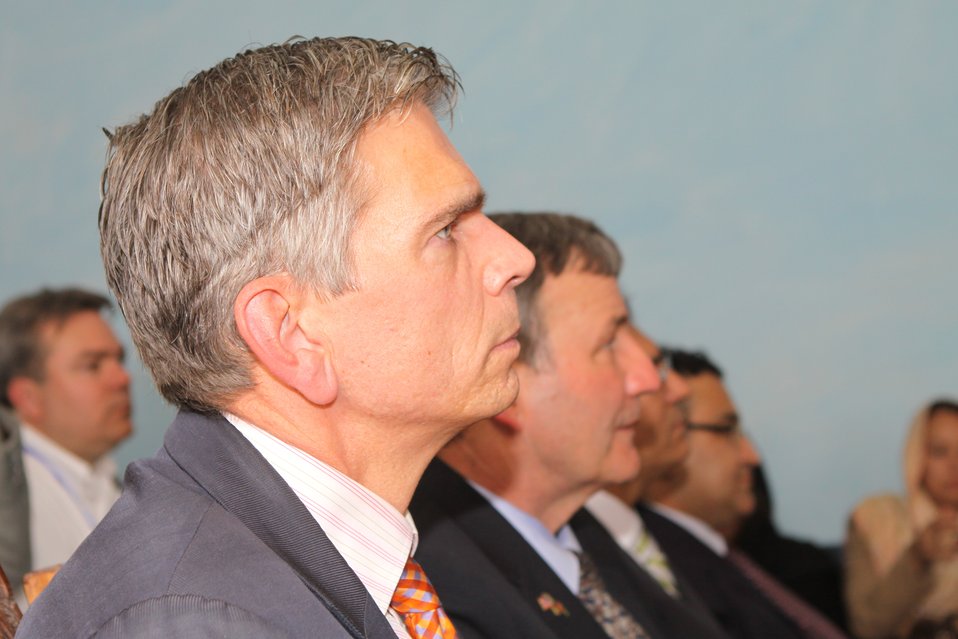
100525 Hirat Textile Company 725